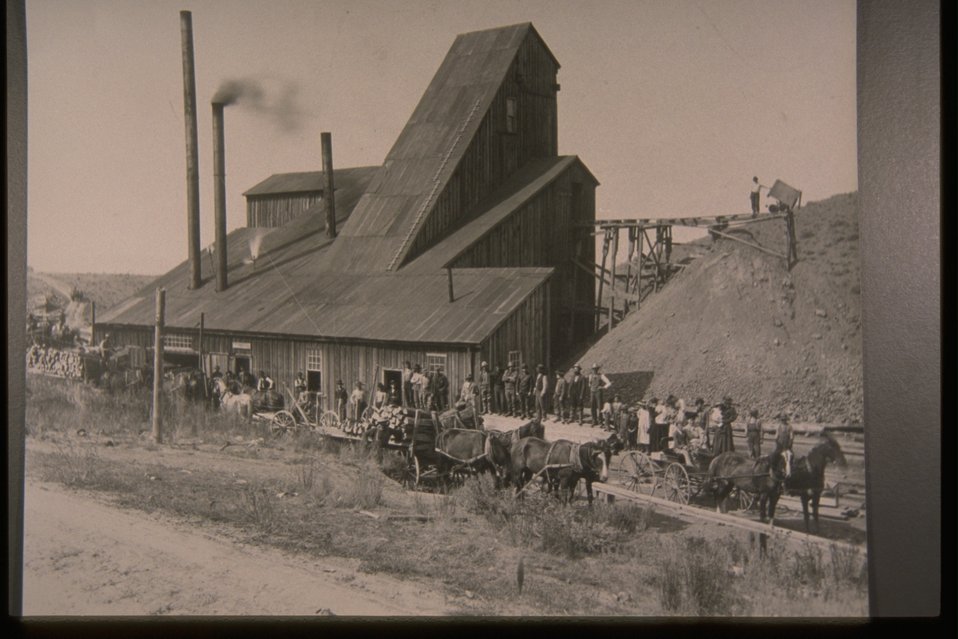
Historic View of the White Swan Mine.